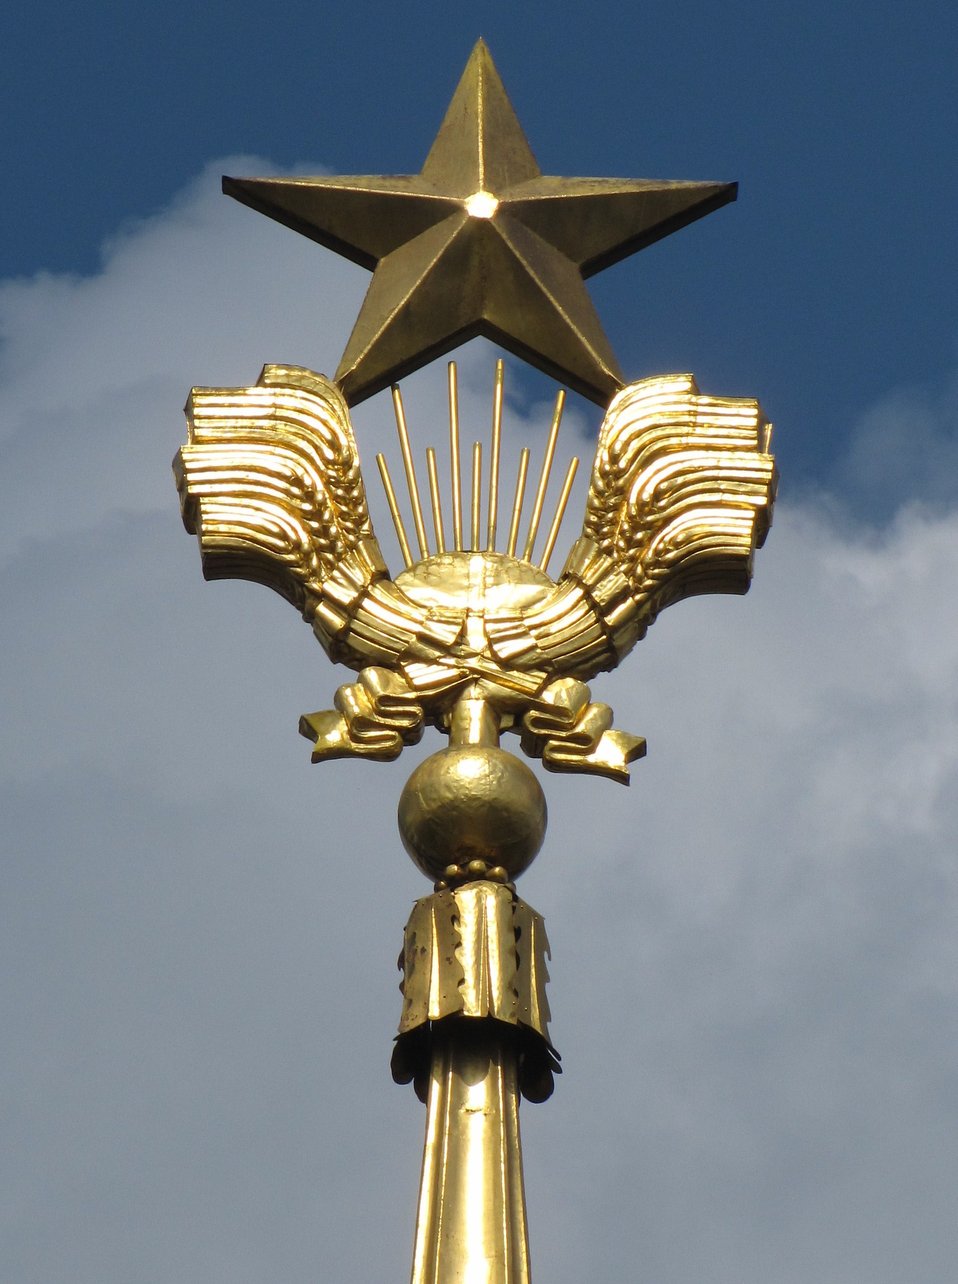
Русский: обратите внимание , что под звездой вместо лавровых ветвей - колосья